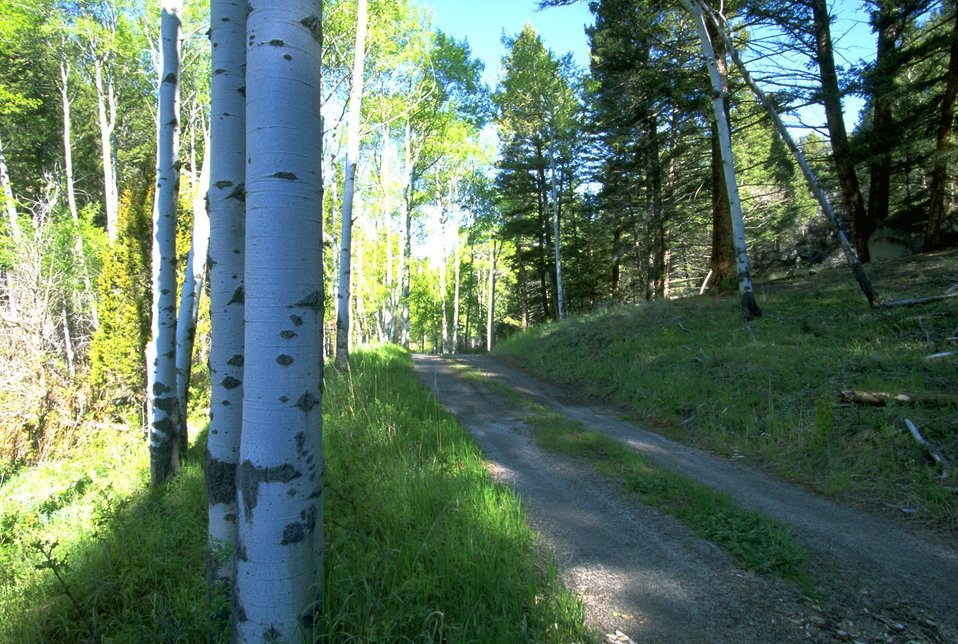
Aspen trees alongside the MacLean Road